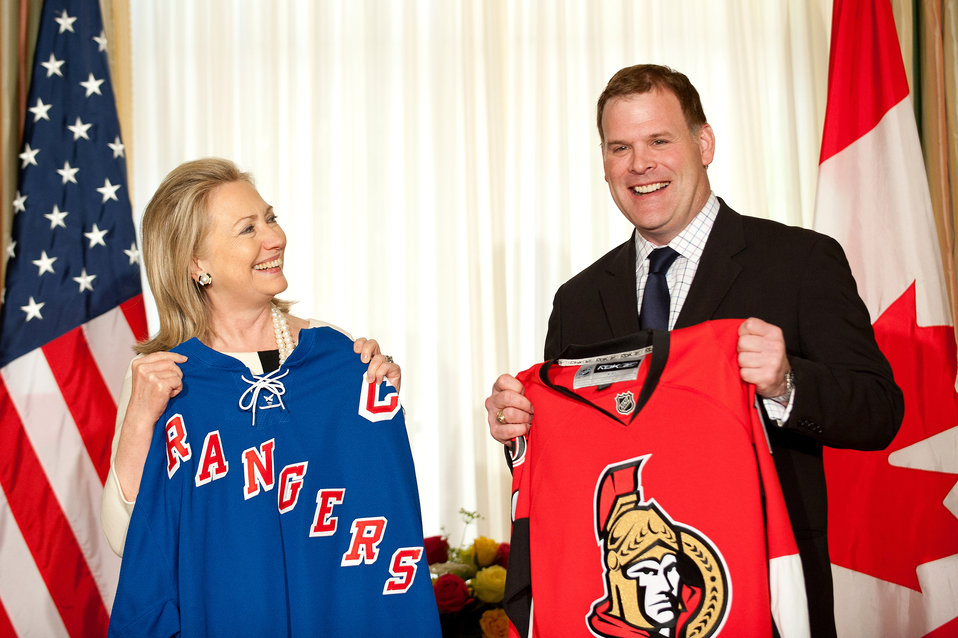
Secretary Clinton and Canadian Foreign Minister Baird Place a Friendly Hockey Bet

U.S. Secretary of State Hillary Clinton and Canadian Foreign Affairs Minister John Baird place a friendly bet between their two NHL teams, the New York Rangers and the Ottawa Senators, who are playing in the first round of the 2012 NHL Eastern Conference Playoffs, after their bilateral meeting during the G-8 Foreign Ministers Meeting in Washington, D.C., on April 12, 2012.